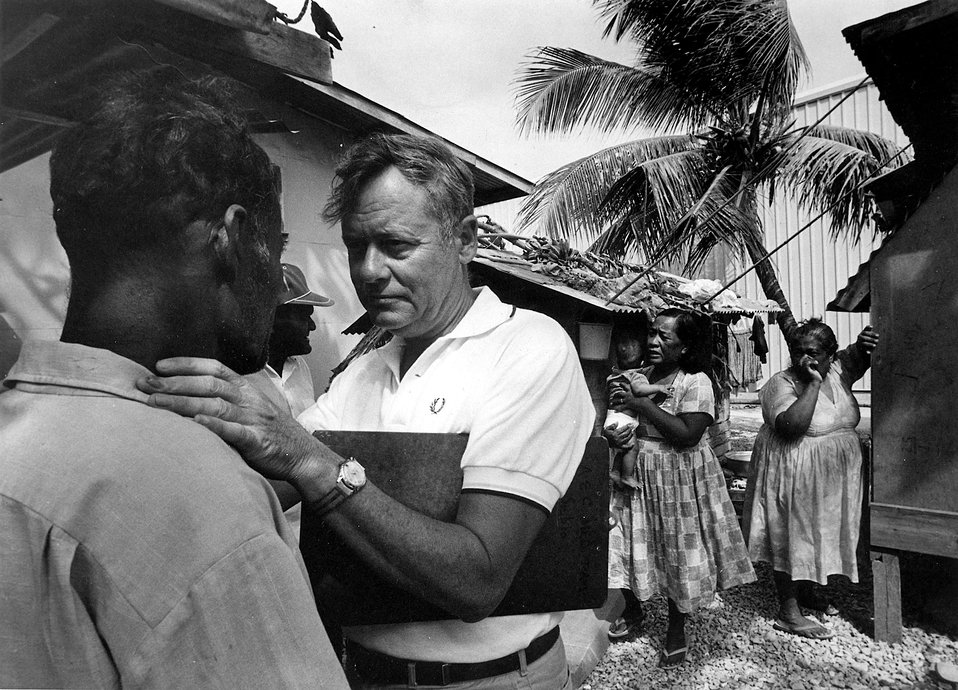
Medical team conducting annual medical examinations of Marshallese people who were exposed to radioactive fallout from an atmospheric nuclear weapons test in 1954.